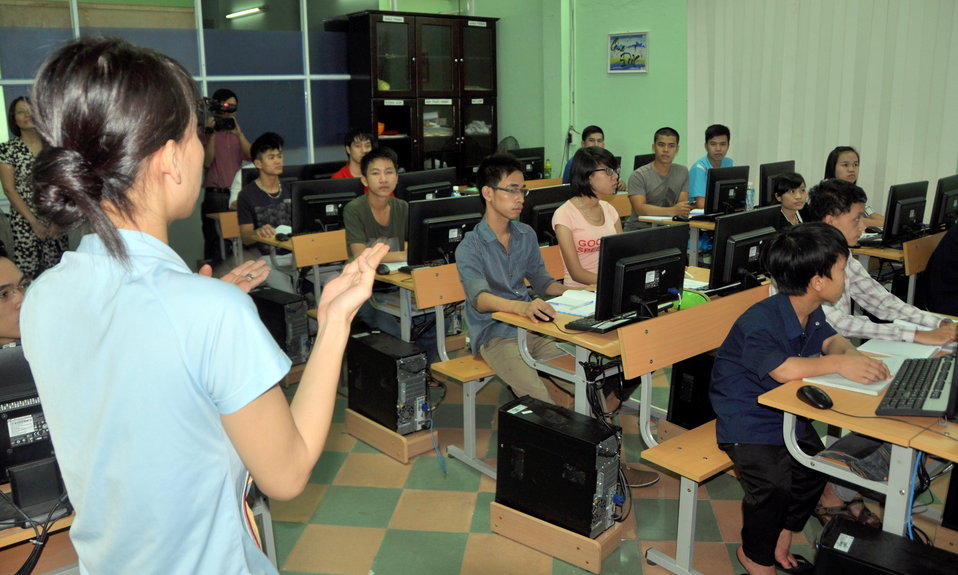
USAID Visits IT Training Program for People with Disabilities at Dong A University

Danang, Vietnam
July 17, 2013